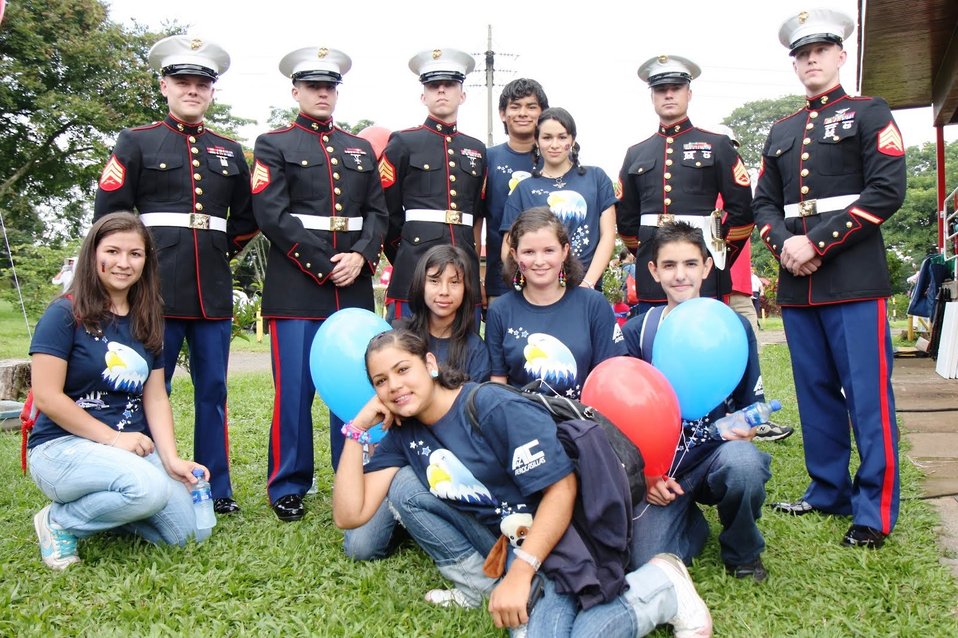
Students Pose for a Photo With U.S. Marines

Students from U.S. Embassy San Jose in Costa Rica's English Access Microscholarship Program pose for a photo with U.S. Marines during the U.S. Independence Day celebration on July 2, 2010, in San Jose, Costa Rica.